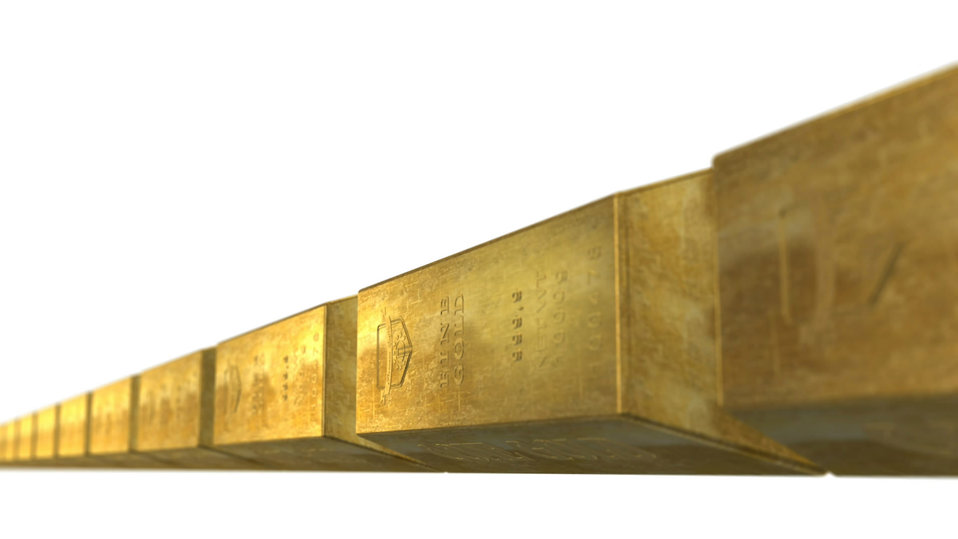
Gold bars on a white background.